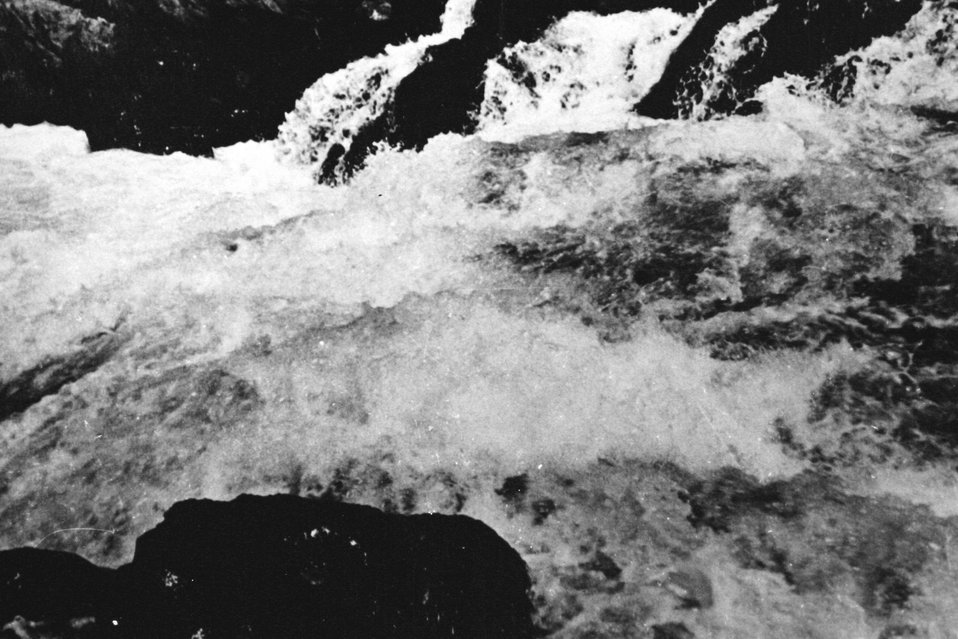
Rainie Falls